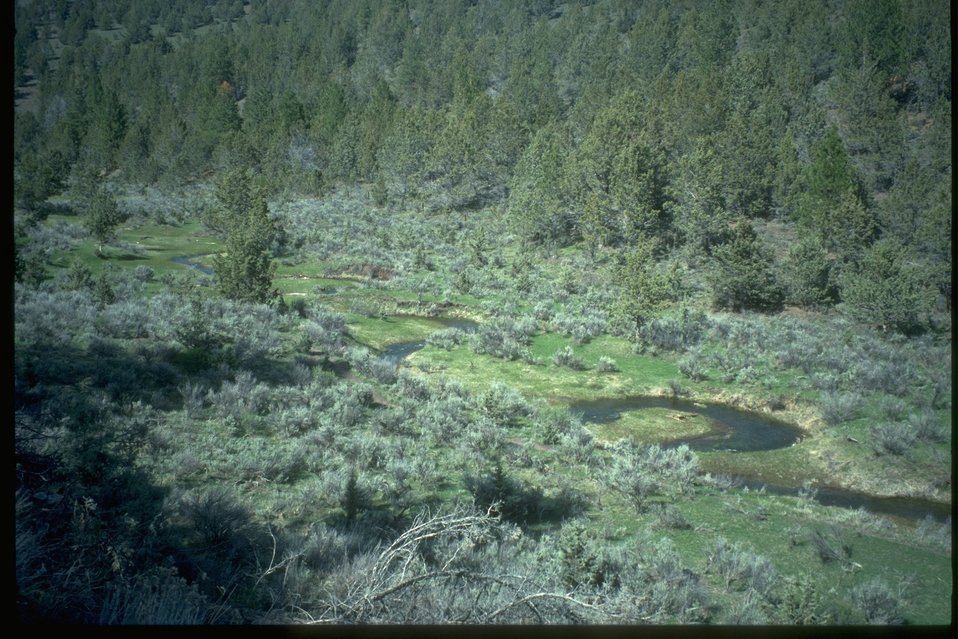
Channel of a stream meanders through central Oregon.